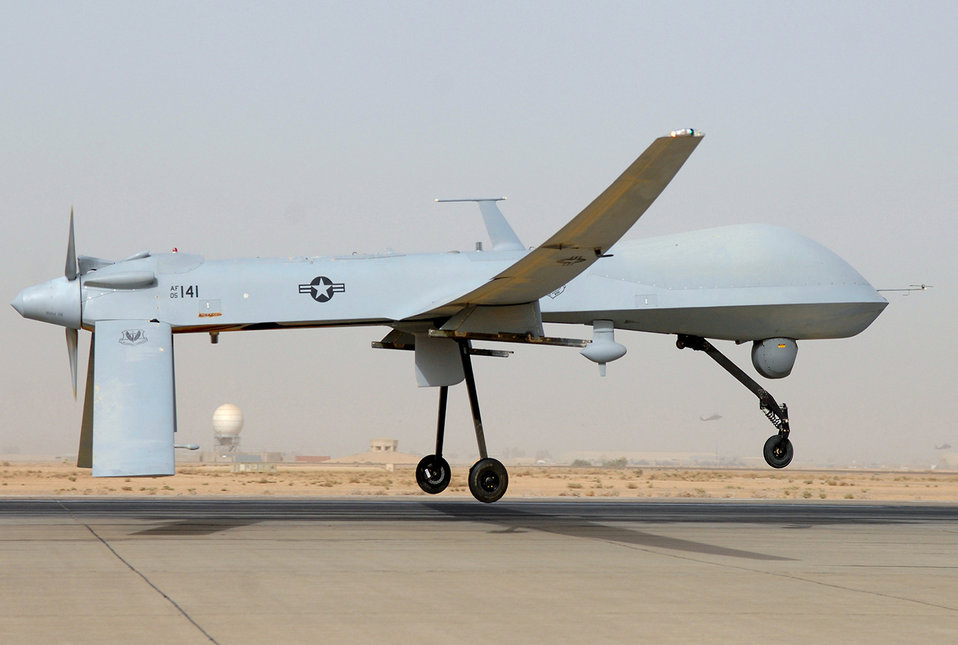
Officials announce Eglin as MQ-1 squadron candidate base

An MQ-1 Predator unmanned aircraft prepares for takeoff in support of operations in Southwest Asia. Air Force officials announced Eglin Air Force Base complex in Florida as a candidate for an Air Force Reserve Command MQ-1 Remote Split-Operations squadron.